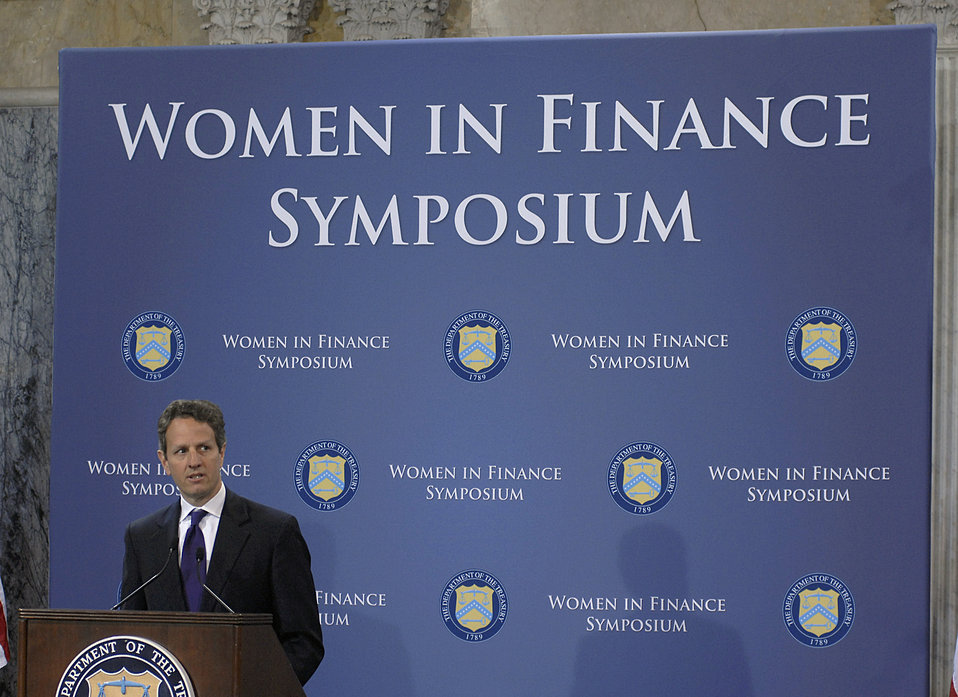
Women in Finance Symposium, 03/29/2010

Secretary Geithner speaks at the Women in Finance Symposium, March 29, 2010.